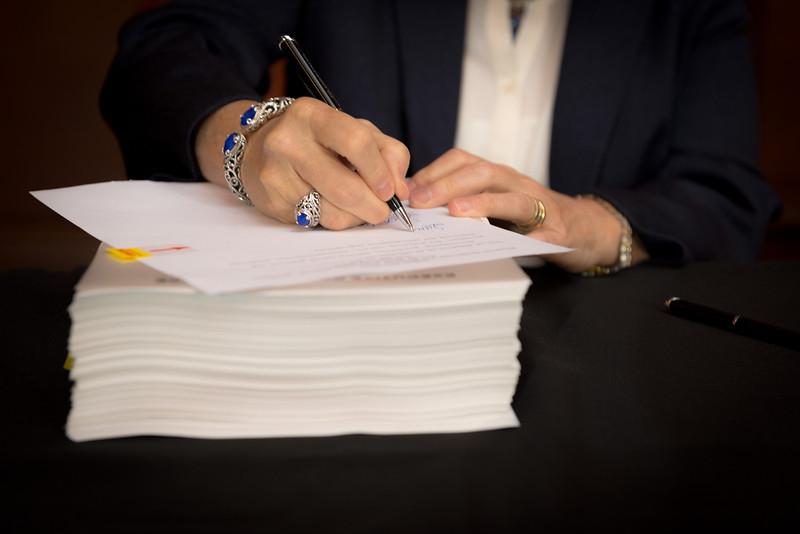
Day in the Life - June 2, 2014

11:00 am - Making it official. (8/15)